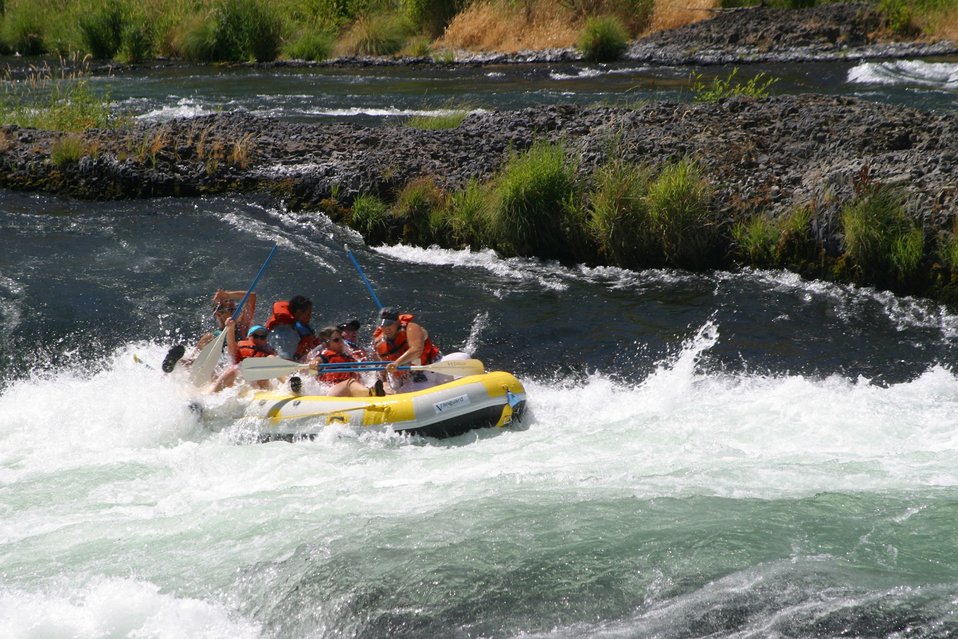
Oak Springs is a Class IV Rapids. The left channel has shallow rocks, large standing waves, turbulent currents and a large hole during high flows. The right channel has a large hole, shallow rocks, and turbulent currents. 7/26/03 Pelton Dam 3600 cfs: Moody Rapids 4300 cfs.